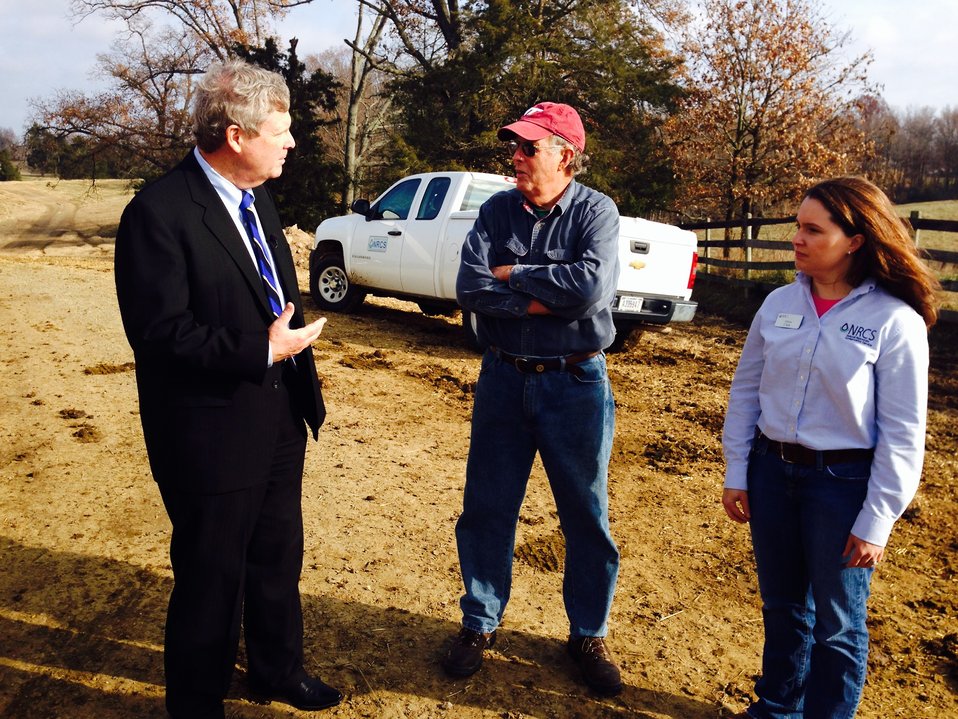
photo 1

(L to R) Agriculture Secretary Tom Vilsack speaks with Sole Proprietor of Silver Ridge Farm Edward Gerald 'Gerry' Silver and U.S. Department of Agriculture (USDA) Natural Resource Conservation Service (NRCS) soil conservationist Alexa 'Lexi' Clark at Silver Ridge Farm in Stafford County, VA on Dec. 5, 2013.